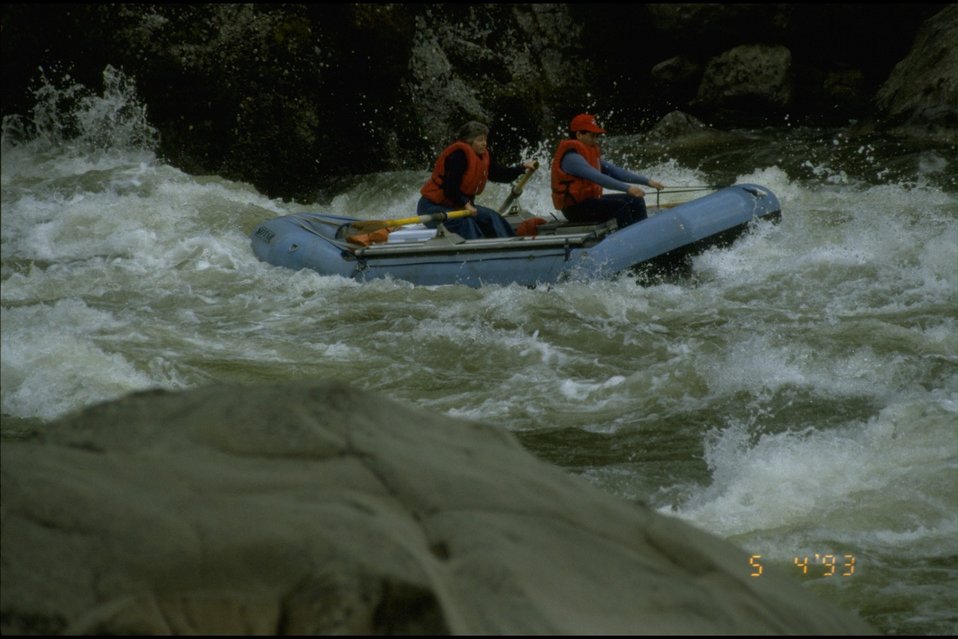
Rogue River - Blossom Bar, wild section. 6,000 cfs.